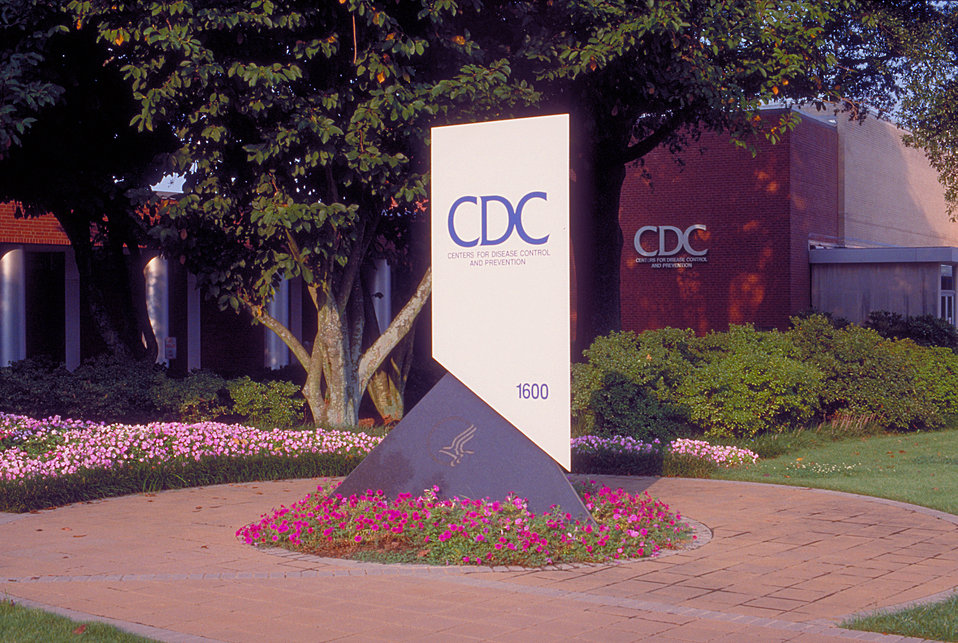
Centers for Disease Control and Prevention, Roybal Campus, Atlanta, Georgia.